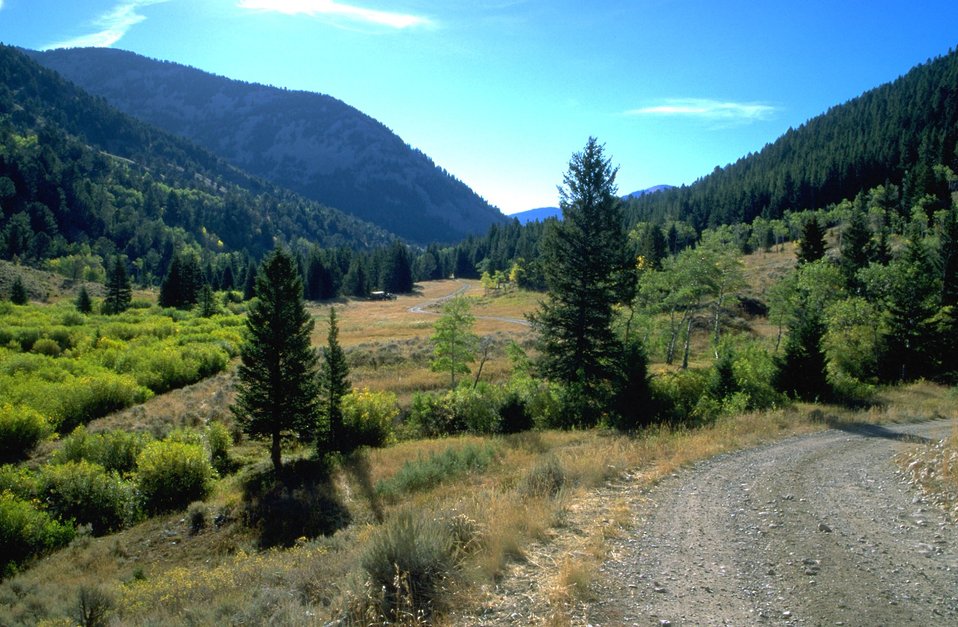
Valley bottom with Aspen slope forested hillsides